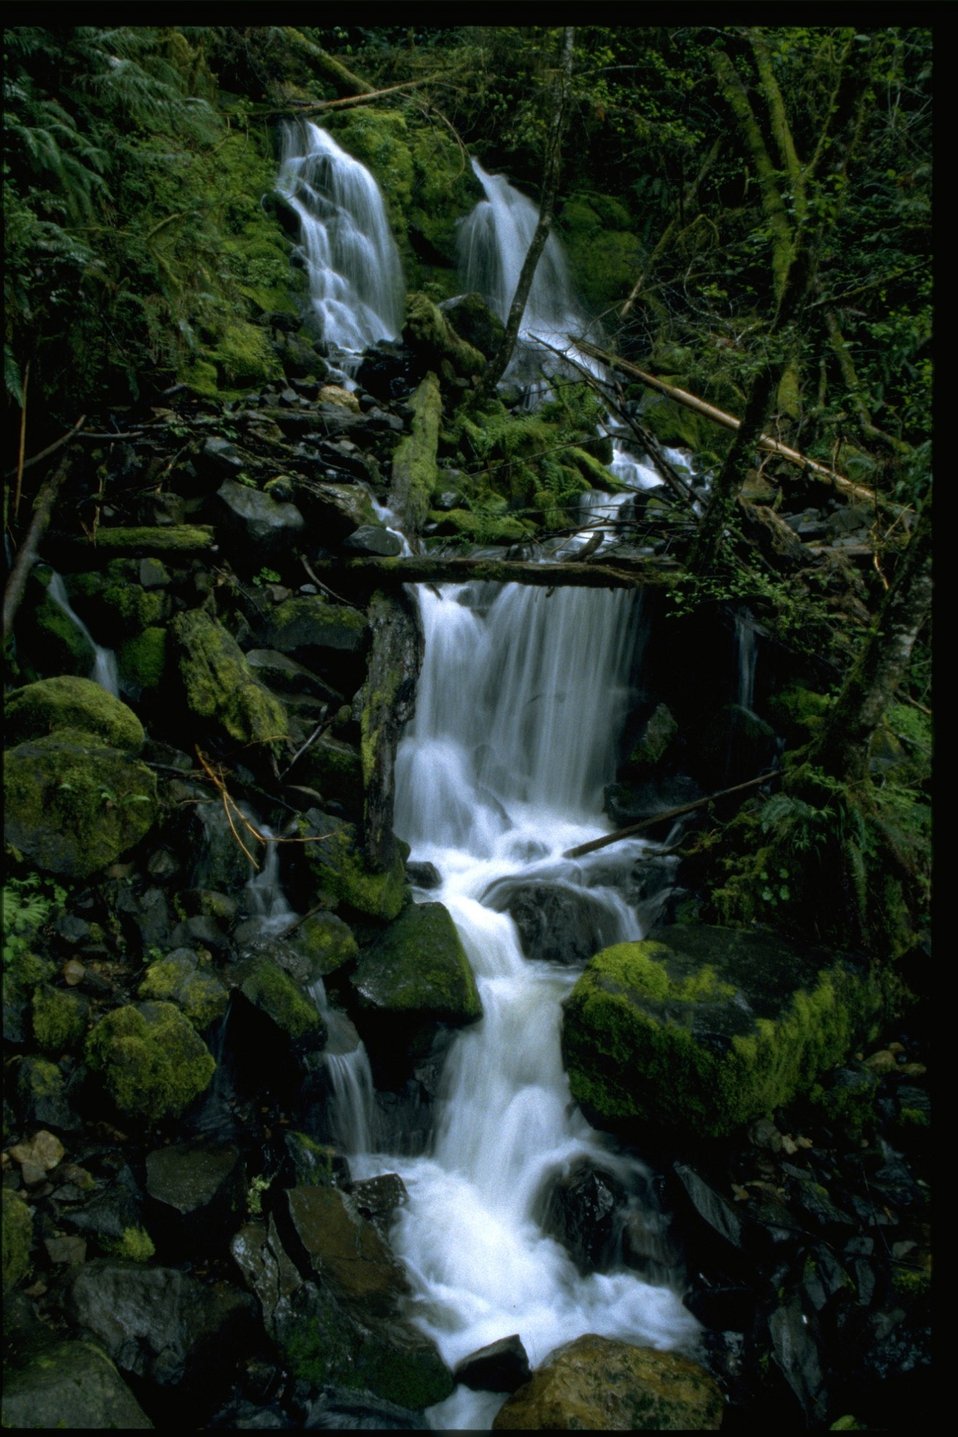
Swiftwater stream.